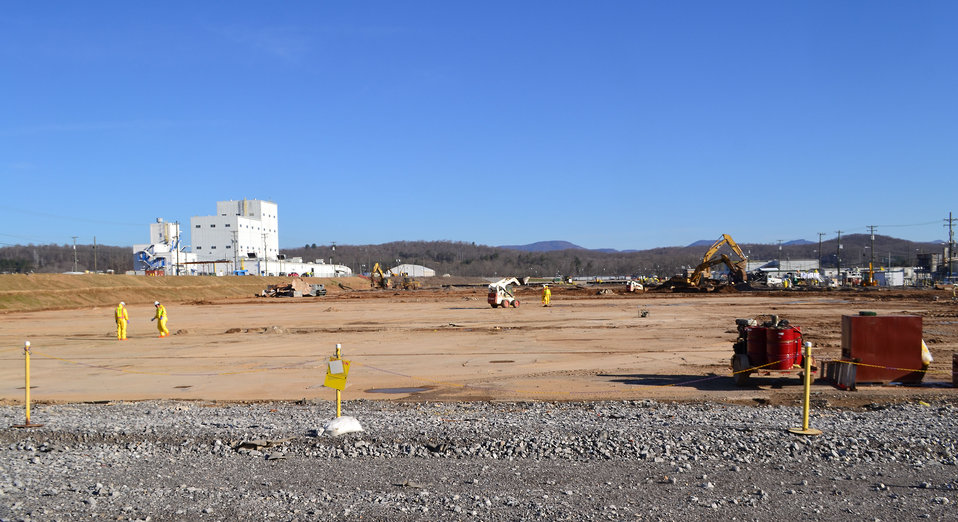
K-25 DandD Site 2014 Oak Ridge

14-037 DOE photo Lynn Freeny 3-21-2014 Oak Ridge Tennessee